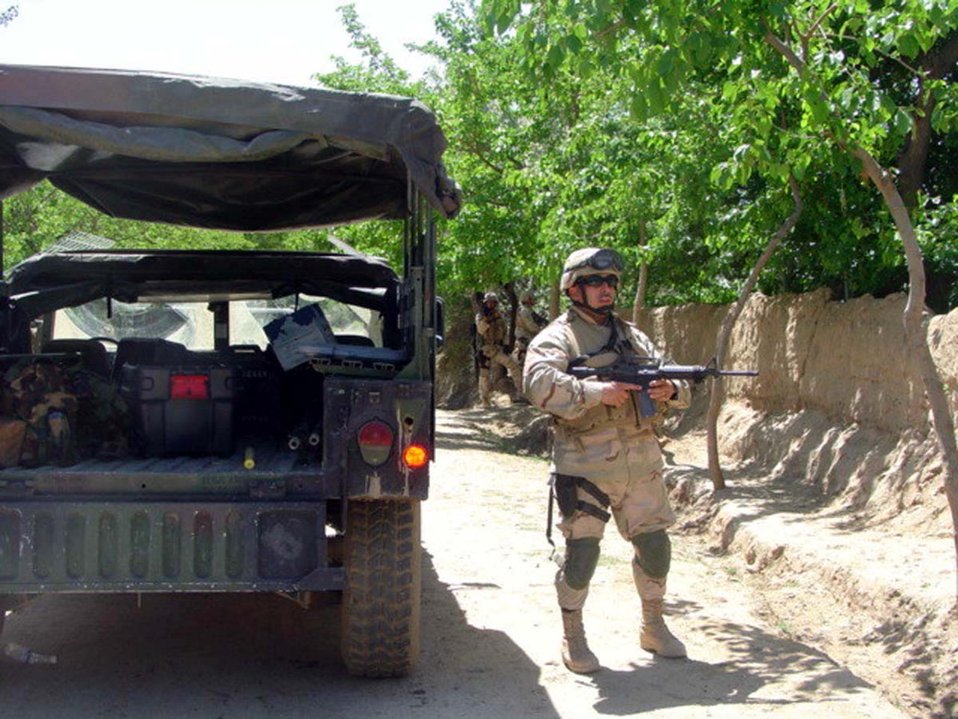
On a mission

DAWLATSHARI, Afghanistan -- Master Sgt. Joseph Ramos keeps watch during a mission here. He is the operations superintendent with the 455th Expeditionary Security Forces Squadron at nearby Bagram Air Base.